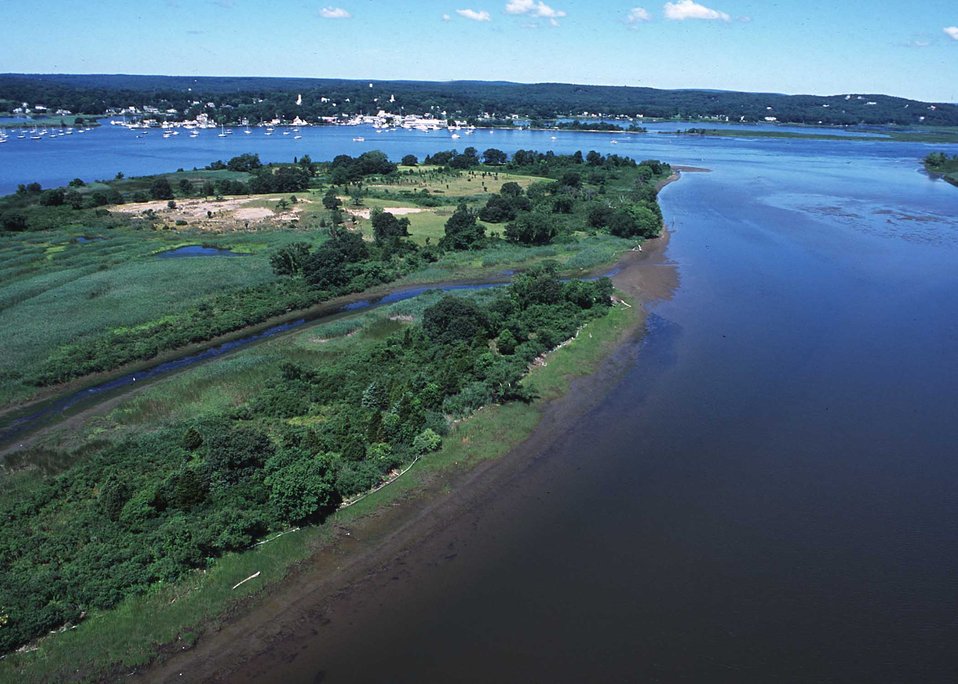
Connecticut River tideland habitat undergoing invasive plant control and native plant community restoration.